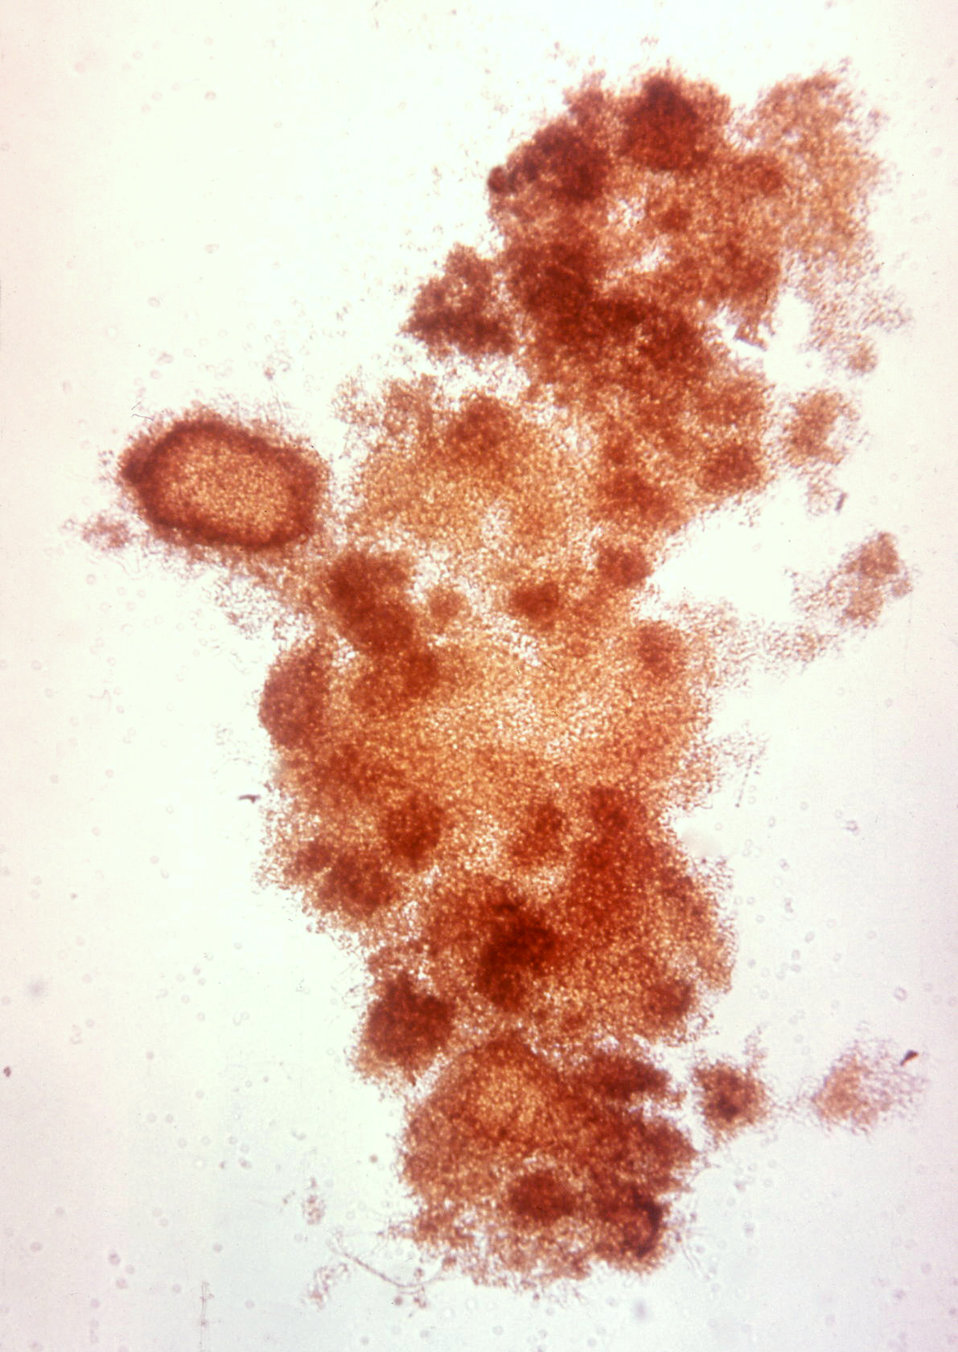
Magnified at 100x, this 1971 photomicrograph depicted a mass known as a 'sclerotium' that had been sloughed from the surface of a colony of the fungus Penicillium sclerotiorum. Sometimes referred to as 'sclerotic bodies', these structures act as mechanisms of regeneration, and are composed of a hard, environmentally-resistant mass of heterogeneous fungal tissues that are able, under favorable conditions, to germinate a new fungal colony.